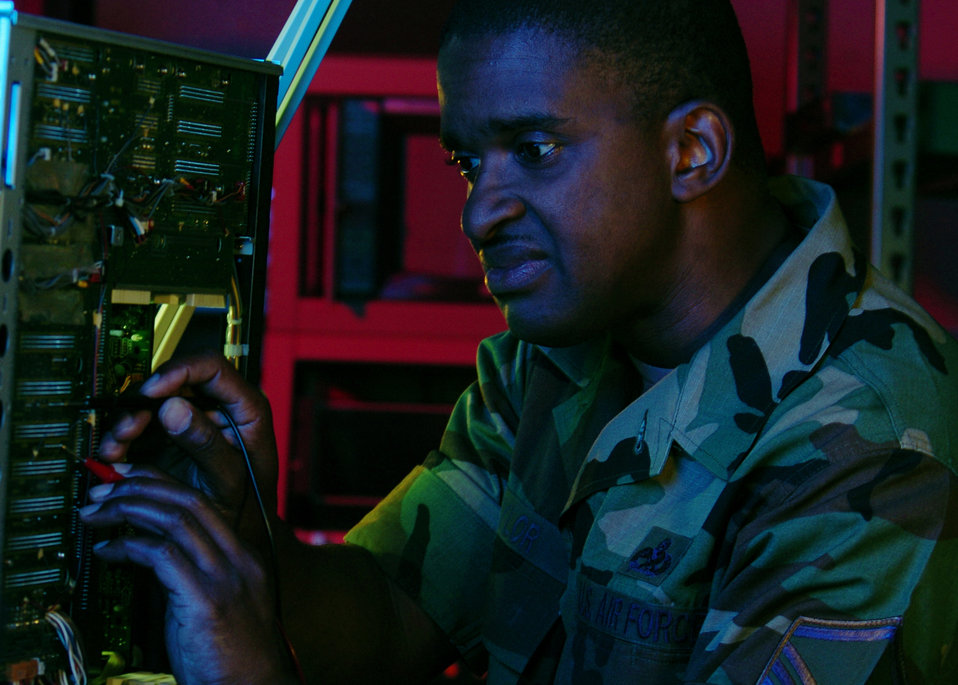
Keeping the mission recorded

YOKOTA AIR BASE, Japan -- Master Sgt. Mark Taylor tests a video tape recorder during an inspection here May 23 . He is a broadcast maintainer from Air Force News Agency's Operating Location-C. They maintain equipment for American Forces Network-Tokyo and other Air Force broadcast detachments in the area. The recorder is used to edit, record and play AFN news stories.